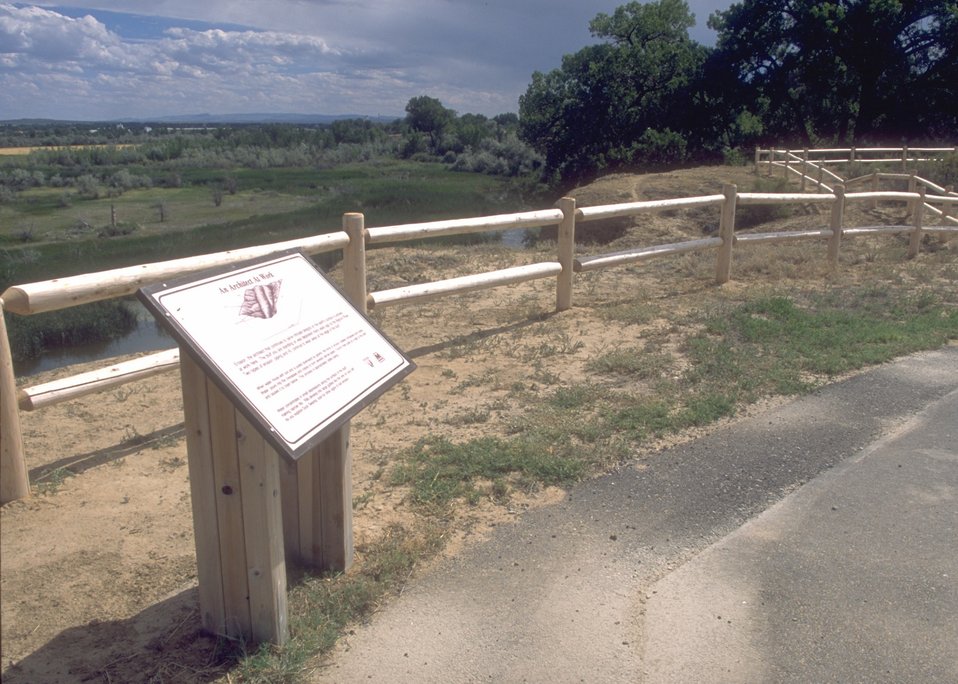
Duck Swamp Interpretive Area, Worland Field Office.